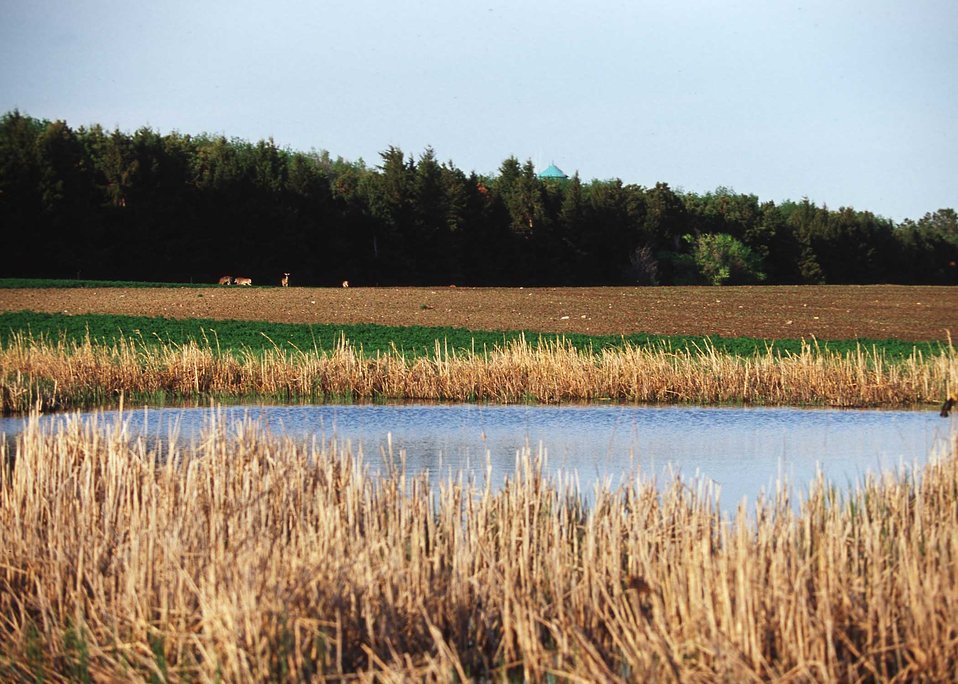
Wetland adjacent to cropland in eastern South Dakota with a shelterbelt in the background. Grass buffer strip between the field and wetland traps sediment and chemicals as well as slows runoff.